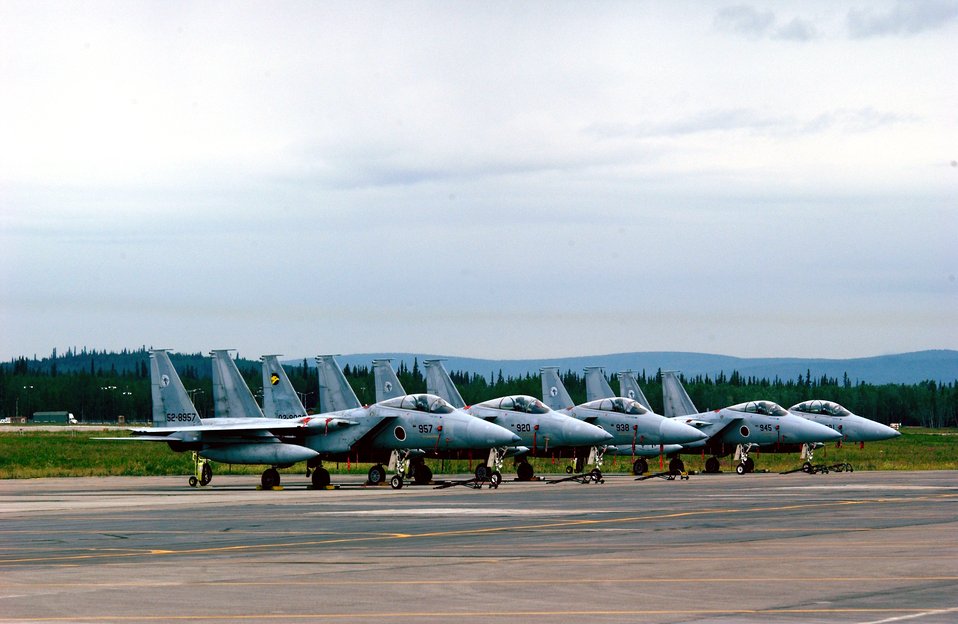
Cooperative Cope Thunder 2006

F-15J aircraft from the Japanese Air Self Defense Force based at Komatsu Air Base, Japan, sit on the flightline at Eielson Air Force Base, Alaska, on July 18 in preparation for Cooperative Cope Thunder 2006. The combined joint air training exercise provides scenarios that are as realistic as combat within the constraints of the training environment.